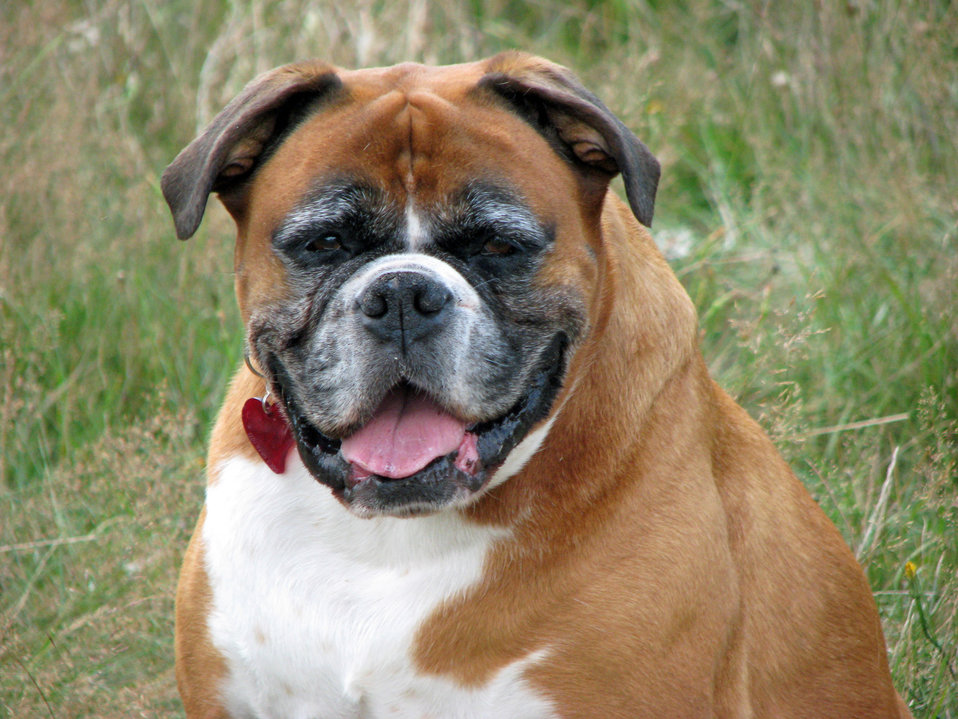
Boxer dog

Close-up portrait of an old boxer dog.